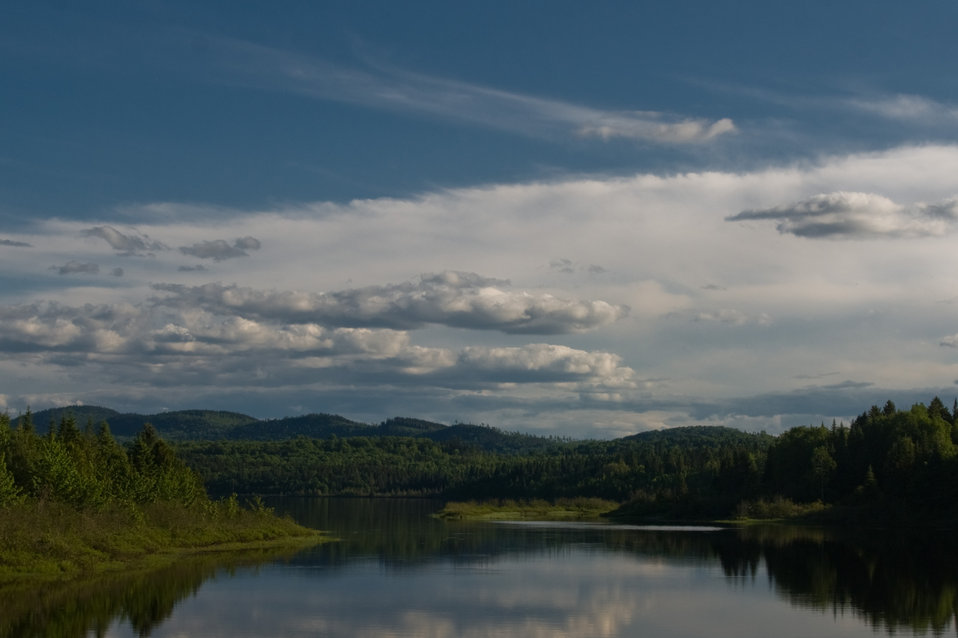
The Great North Woods

Beautiful landscapes surrounded the forests of the Great North Woods region of Maine where the Canada Lynx Project took place.